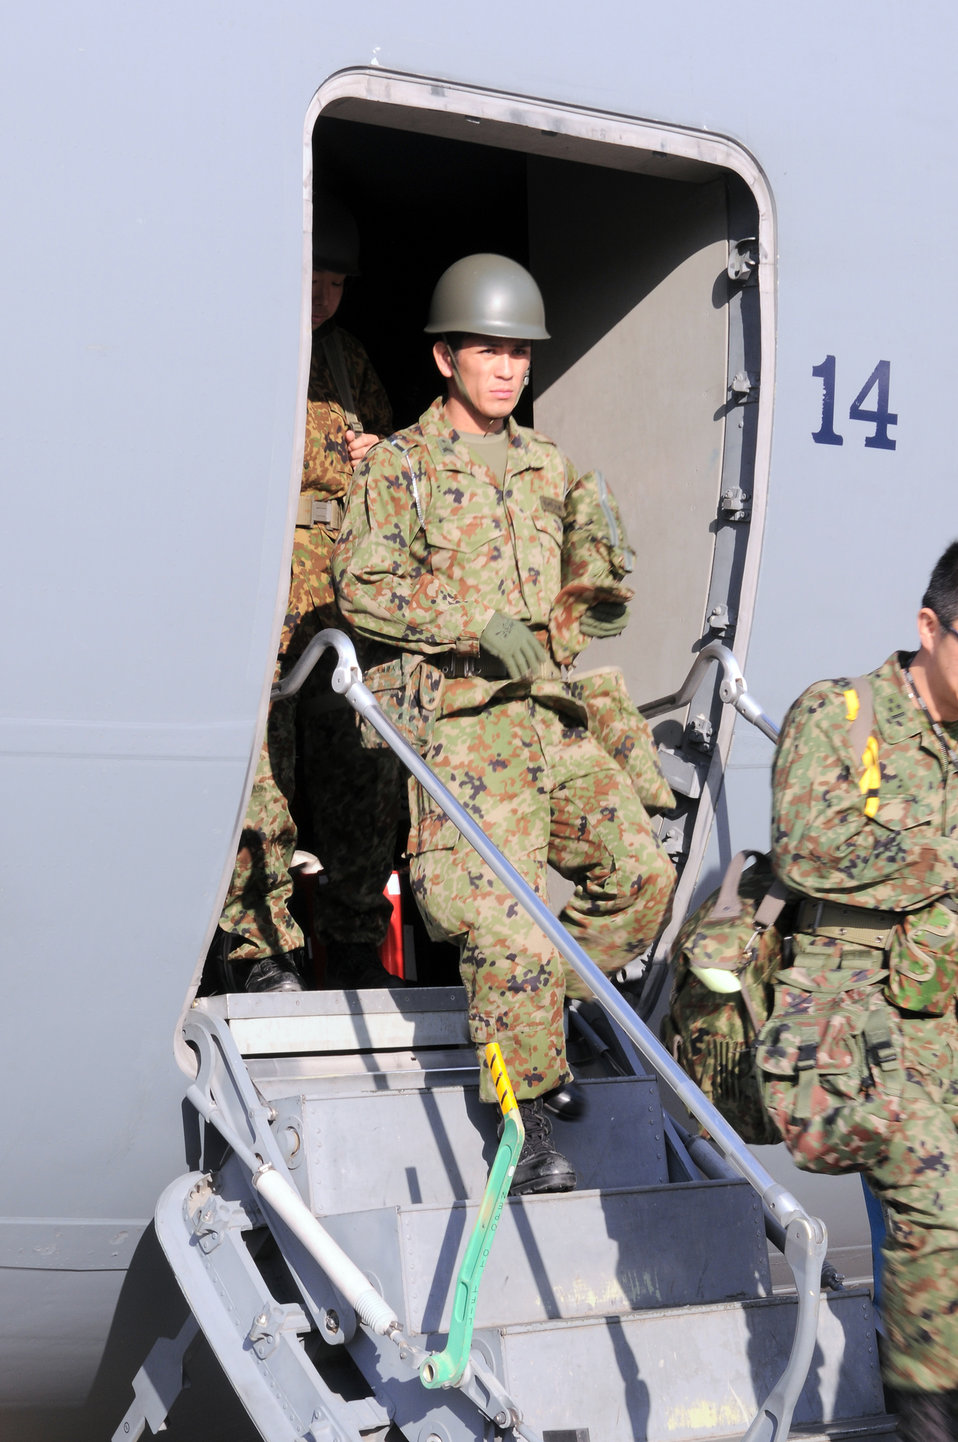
C-17 transports Japanese forces to help relief efforts

Japan Ground Self-Defense Force members disembark from the C-17 Globemaster III that transported them to Yokota Air Base, Japan, from Okinawa, March 17, 2011. JGSDF will team up with US forces to support earthquake and tsunami relief efforts.